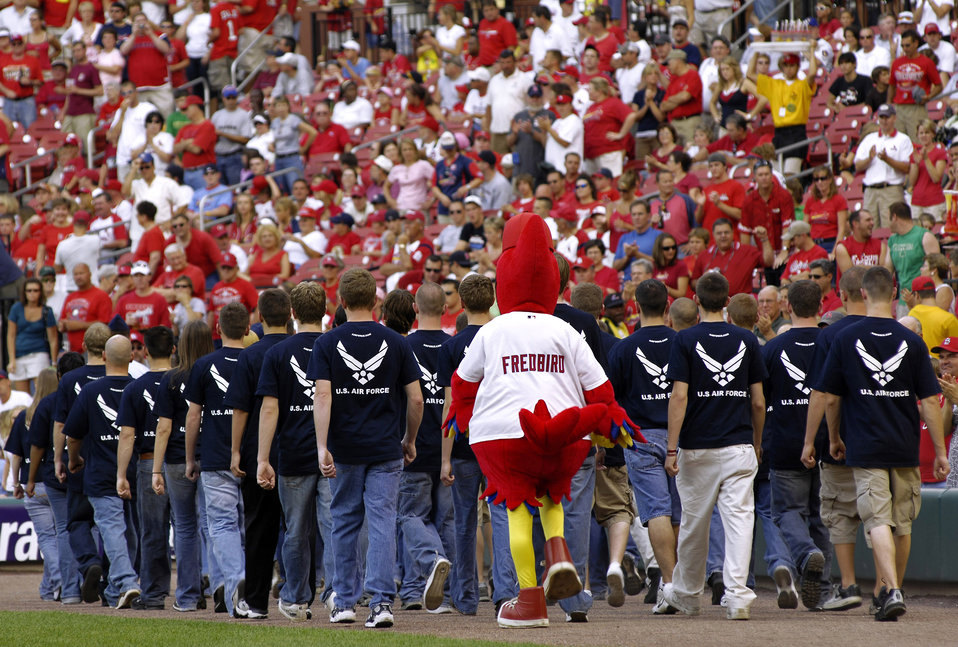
Fredbird drills with the new recruits

Fredbird, the St. Louis Cardinals mascot, marches out with 40 young men and women who were just sworn in to the Air Force during a pregame Air Force Week St. Louis event July 7 at Busch Stadium in St. Louis.